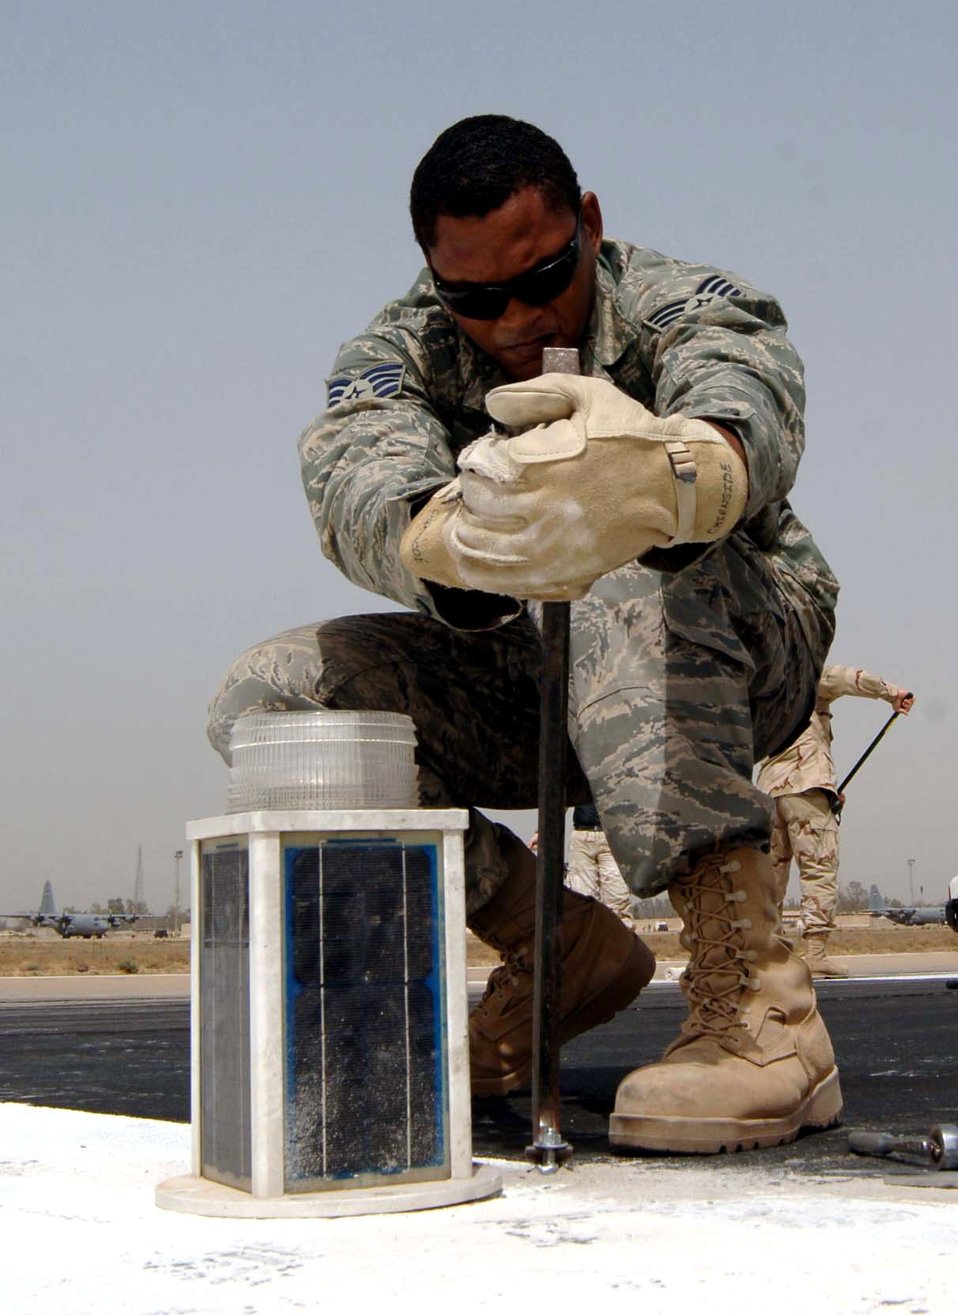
Drawing a line in the desert

Staff Sgt. Charles Thompson pries up a stripped mounting bolt for a threshold light on the Baghdad International Airport runway May 30 in Iraq. These threshold lights are being installed temporarily to shorten the runway by 3,000 feet so repairs can be made. Sergeant Thompson is a 447th Expeditionary Civil Engineer Squadron electrician.